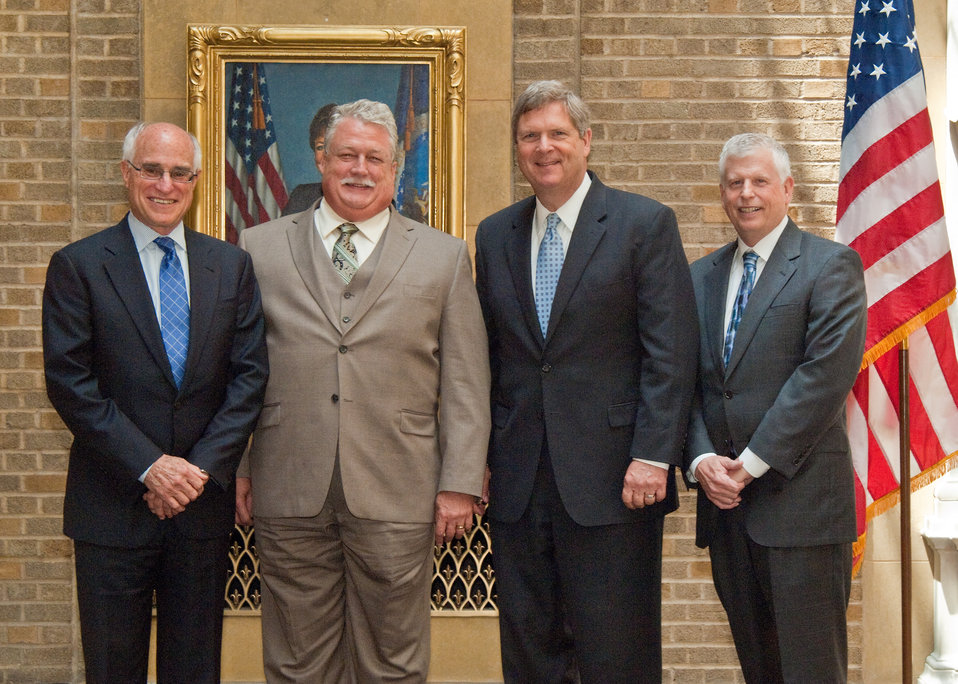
Undersecretary, Natural Resources and Environment, Harris Sherman, Floyd Allen Thompson, Forest Service, Agriculture Secretary Tom Vilsack and Forest Service Chief Tom Tidwell pose with Thompson after his Legends award presented by the American Recreation Coalition. The award program was held on the patio of the Department of Agriculture in Washington, DC on Thursday, June 10, 2010. USDA Photo 10di1398-04.